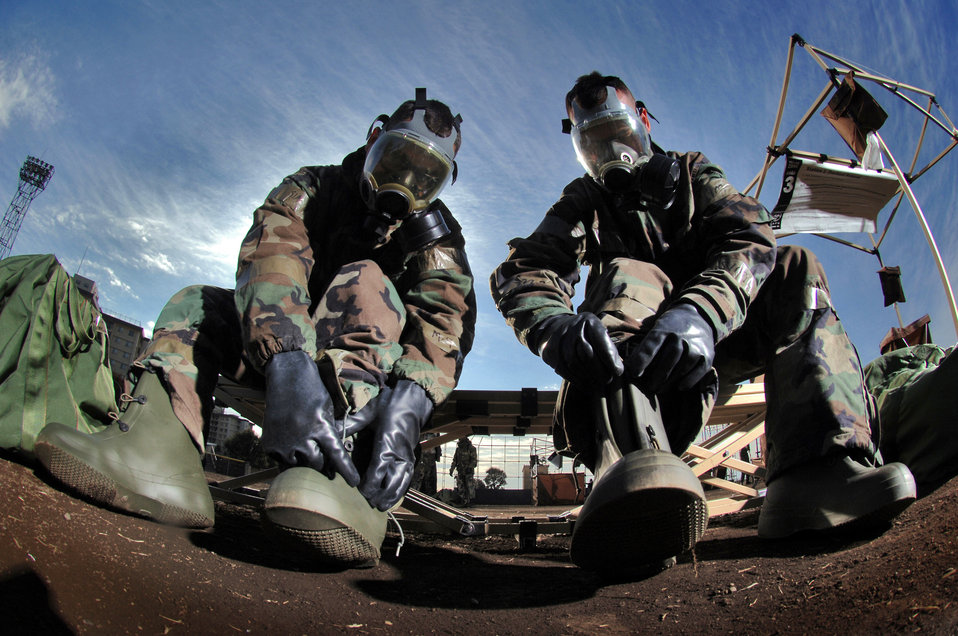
Contamination

YOKOTA AIR BASE, Japan (AFPN) -- Staff Sgts. Mark Freeman (left) and Tom McCauley remove their protective overboots at the contaminated control area during